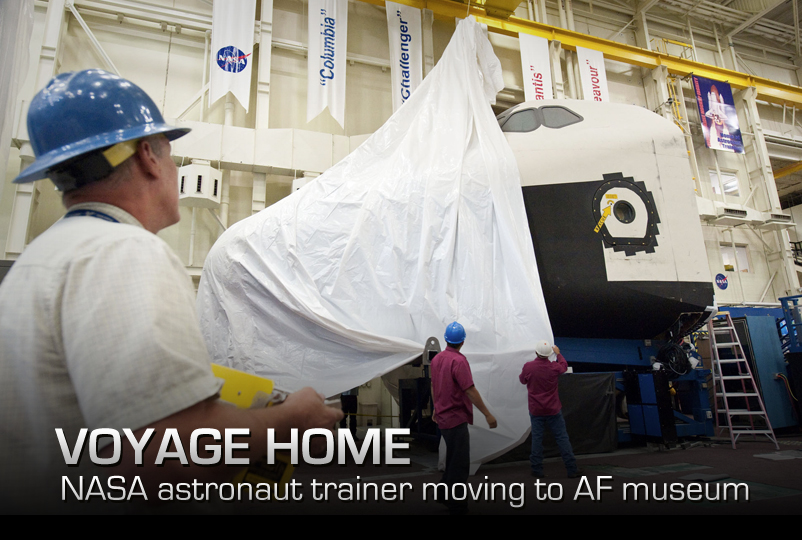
Voyage Home